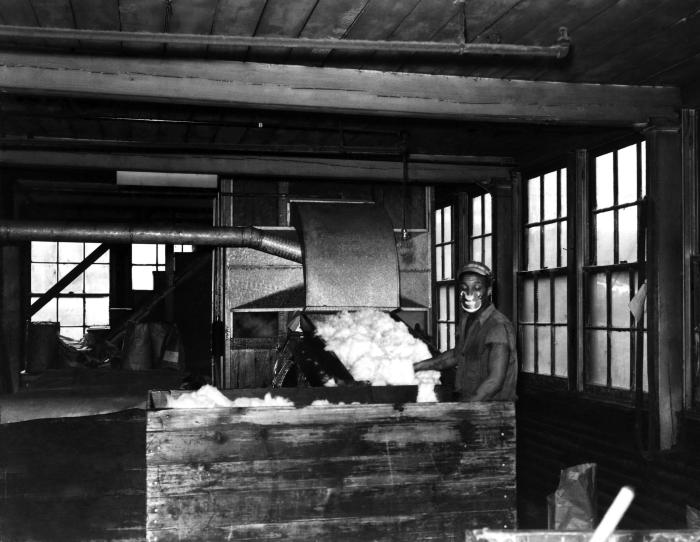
This historical image was provided by the Center for Disease Control's (CDC), National Institute for Occupational Safety and Health (NIOSH). The photograph depicted a hatters' industry factory worker who was in the process of loading fur into a bin, which was flowing down a shoot. Though it cannot be determined from this image, as to what may have been the next step in the hat manufacturing process, the man was wearing a filtered breathing mask. However, he was not wearing protective goggles, or gloves. Working with newly processed fur, which had been 'carroted', or fixed with mercury nitrate, workers could be exposed to airborne mercury, thereby, suffering the detrimental neurologic consequences from its inhalation. Using steam facilitated the airborne dissemination of this neurotoxic element.